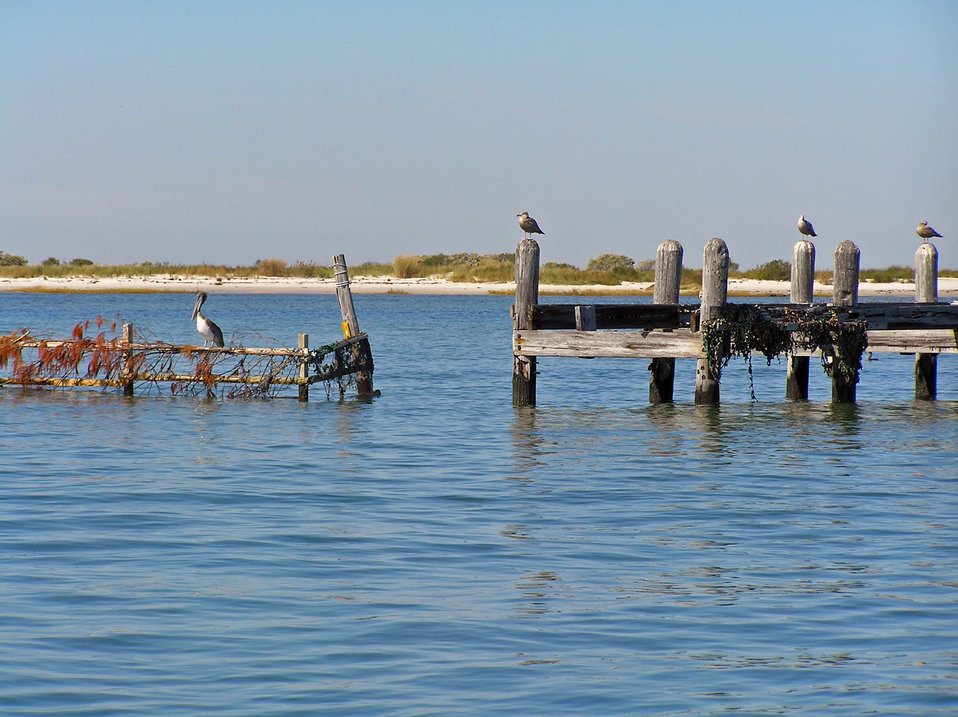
Dock

Plum Tree Island National Wildlife Refuge, VA.